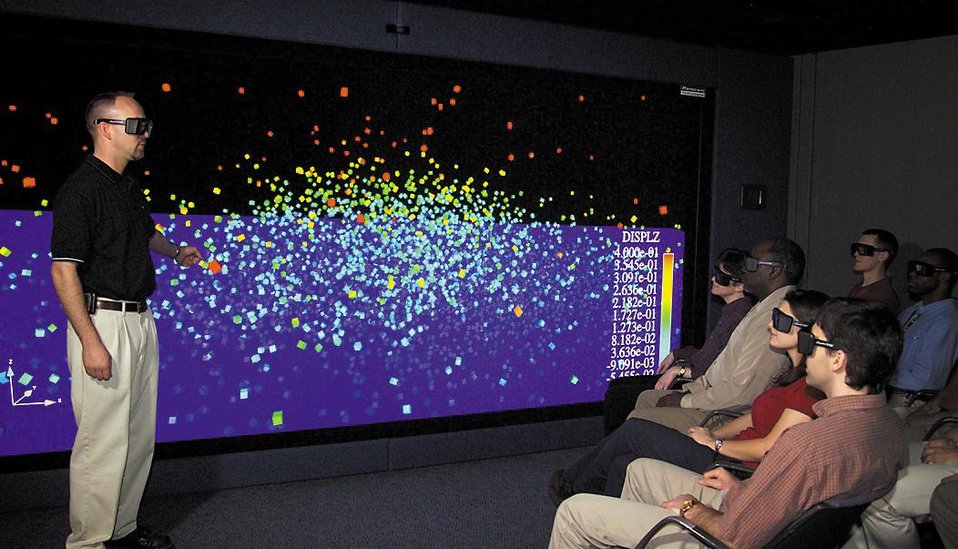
VIRTUAL REALITY AT DOE'S KANSAS CITY PLANT ALLOWS ENGINEERS TO SEE INSIDE DESIGNS.

THE 'IMMERSION ROOM' AT THE KANSAS CITY PLANT, A NATIONAL NUCLEAR SECURITY ADMINISTRATION FACILITY, CAN IMPROVE THE COMPREHENSION OF COMPLEX DESIGNS AND ANALYSIS. THE ROOM IS EQUIPPED WITH A 14 FOOT WIDE BY 6 FOOT HIGH REAR PROJECTION SCREEN. USERS CAN WEAR A HEAD MOUNTED DISPLAY WHICH WORKS WITH ULTRASONIC TRACKERS TO CREATE A VIRTUAL EXPERIENCE, WHICH CAN RESULT IN IMPROVED PRODUCT AND ARCHITECTURAL DESIGNS, WHILE REDUCING ITERATIONS AND CYCLE TIME.